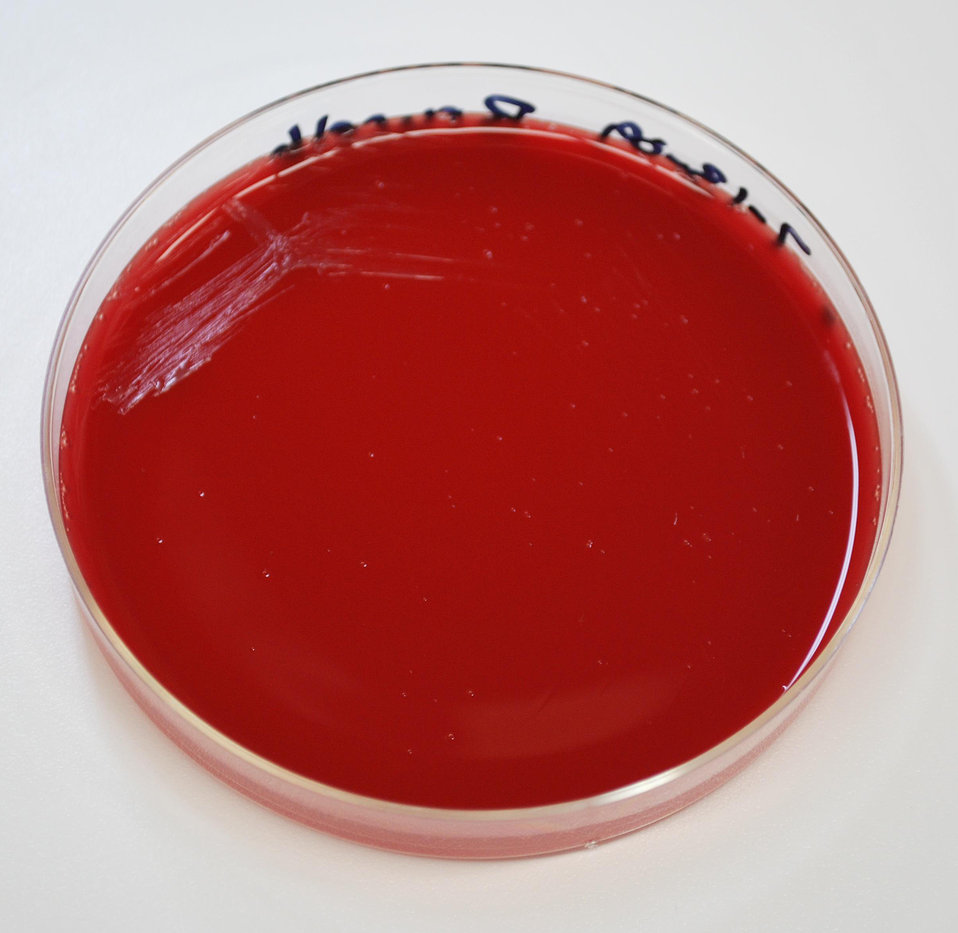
This image depicts the colonial morphology exhibited by colonies of Brucella abortus bacterial, which had been cultivated on sheep's blood agar (SBA), for a period of 24 hours.Infectious Agent